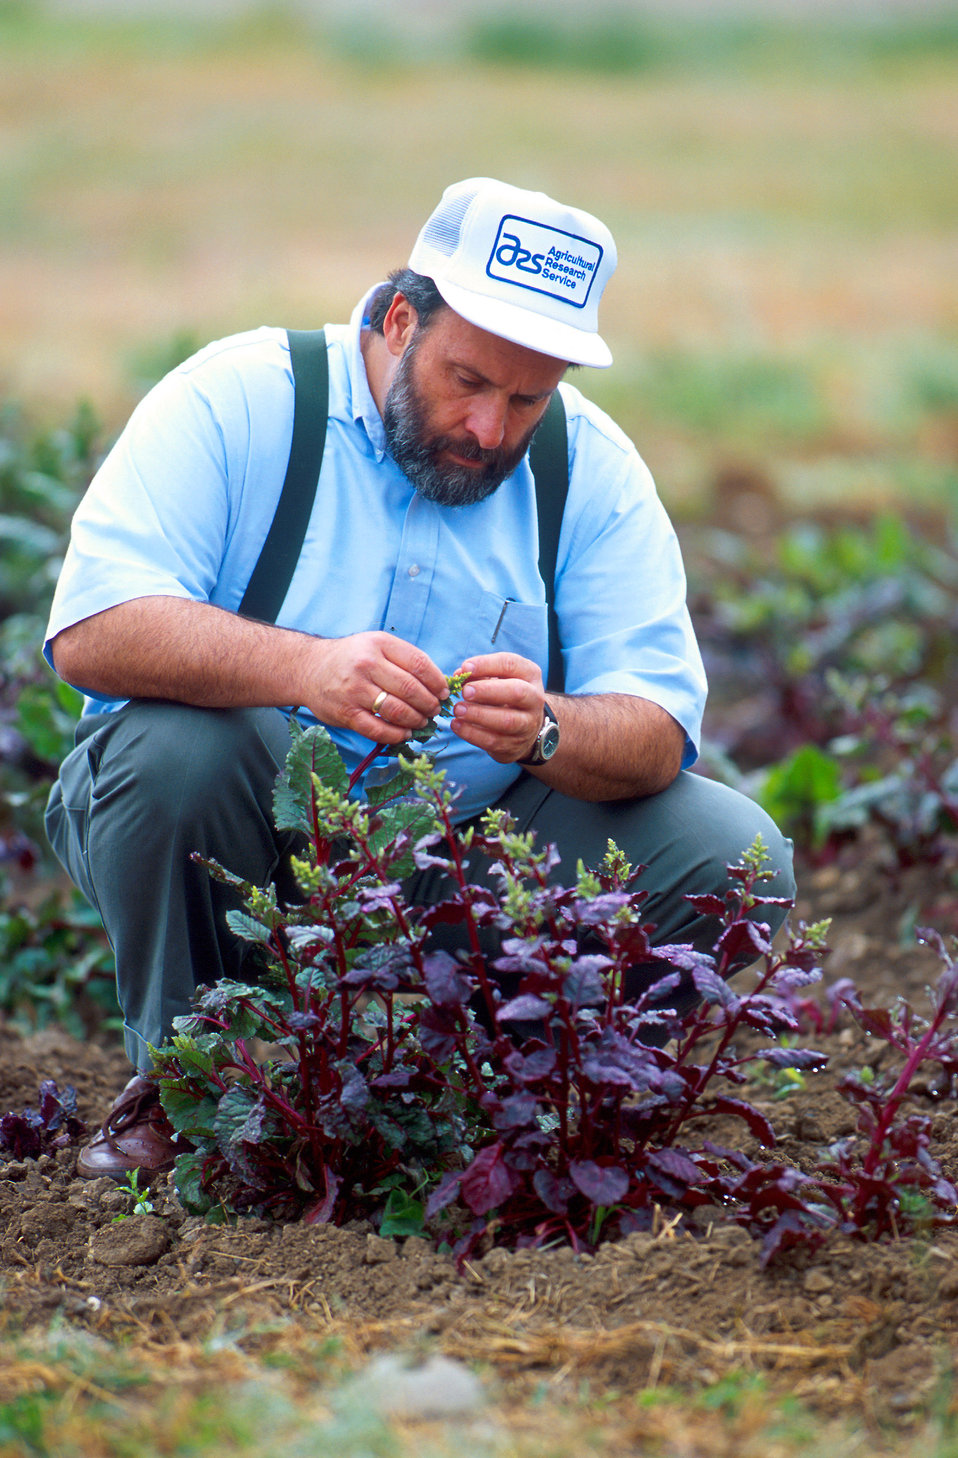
U.S. Department of Agriculture (USDA) Agricultural Research Service (ARS) geneticist Leonard Panella checks pollen fertility on Rhizoctonia root rot-resistant sugar beet plants. Root-rotting fungi can weaken, stunt, or kill sugar beet plants.